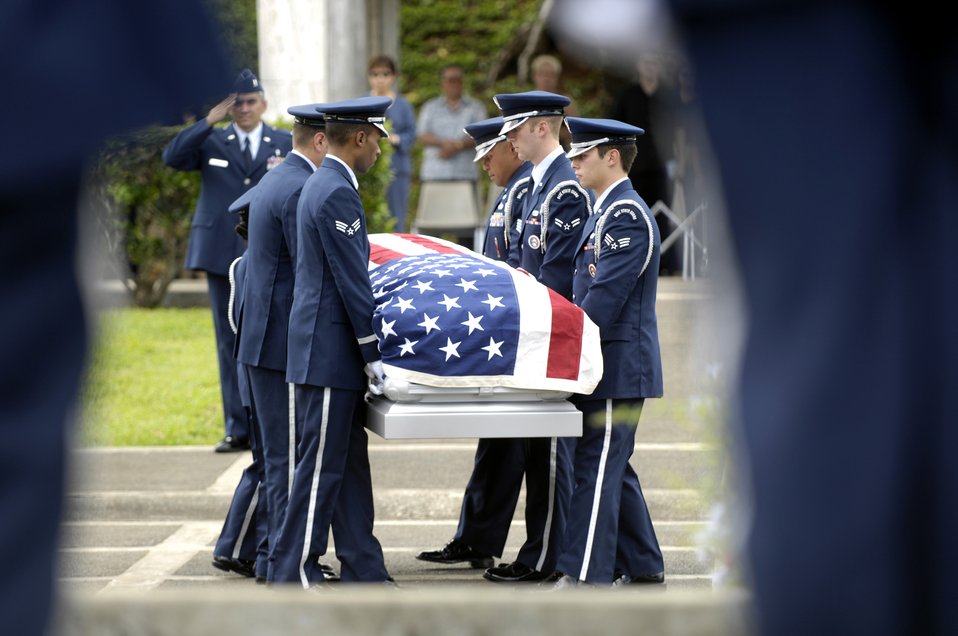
Rendering military honors for a veteran

Members of the 15th Airlift Wing Honor Guard at Hickam Air Force Base, Hawaii, perform pallbearer duties Oct. 26 during a veteran's funeral at Hawaii Veterans Cemetery. The base honor guard is rendering military honors to the veteran and his family.